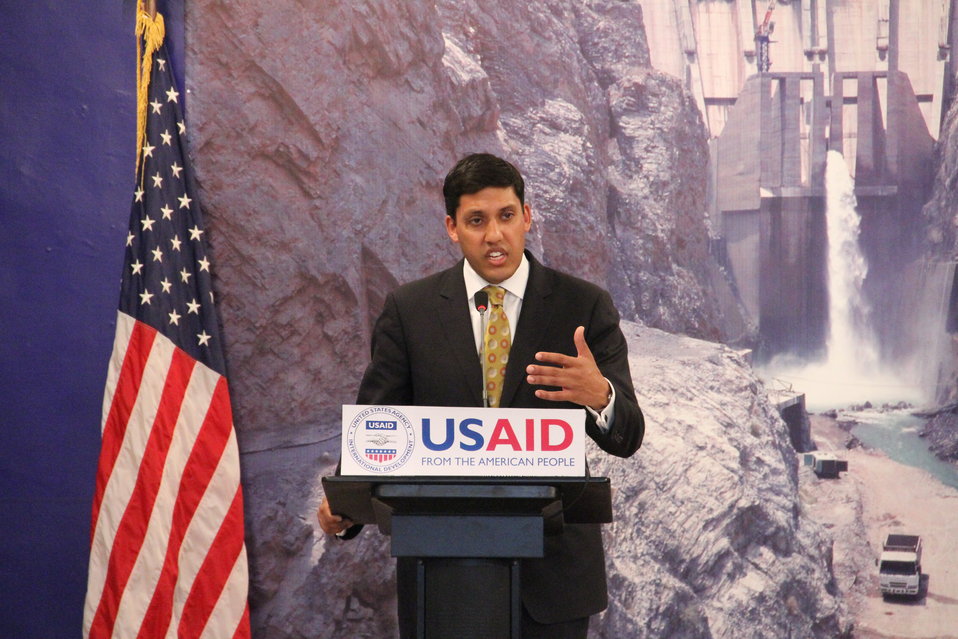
Photo Exhibition Celebrate US-PAK Cooperation at PNCA, Islamabad on April 13, 2012

Dr. Rajiv Shah, Administrator for USAID addressing the media